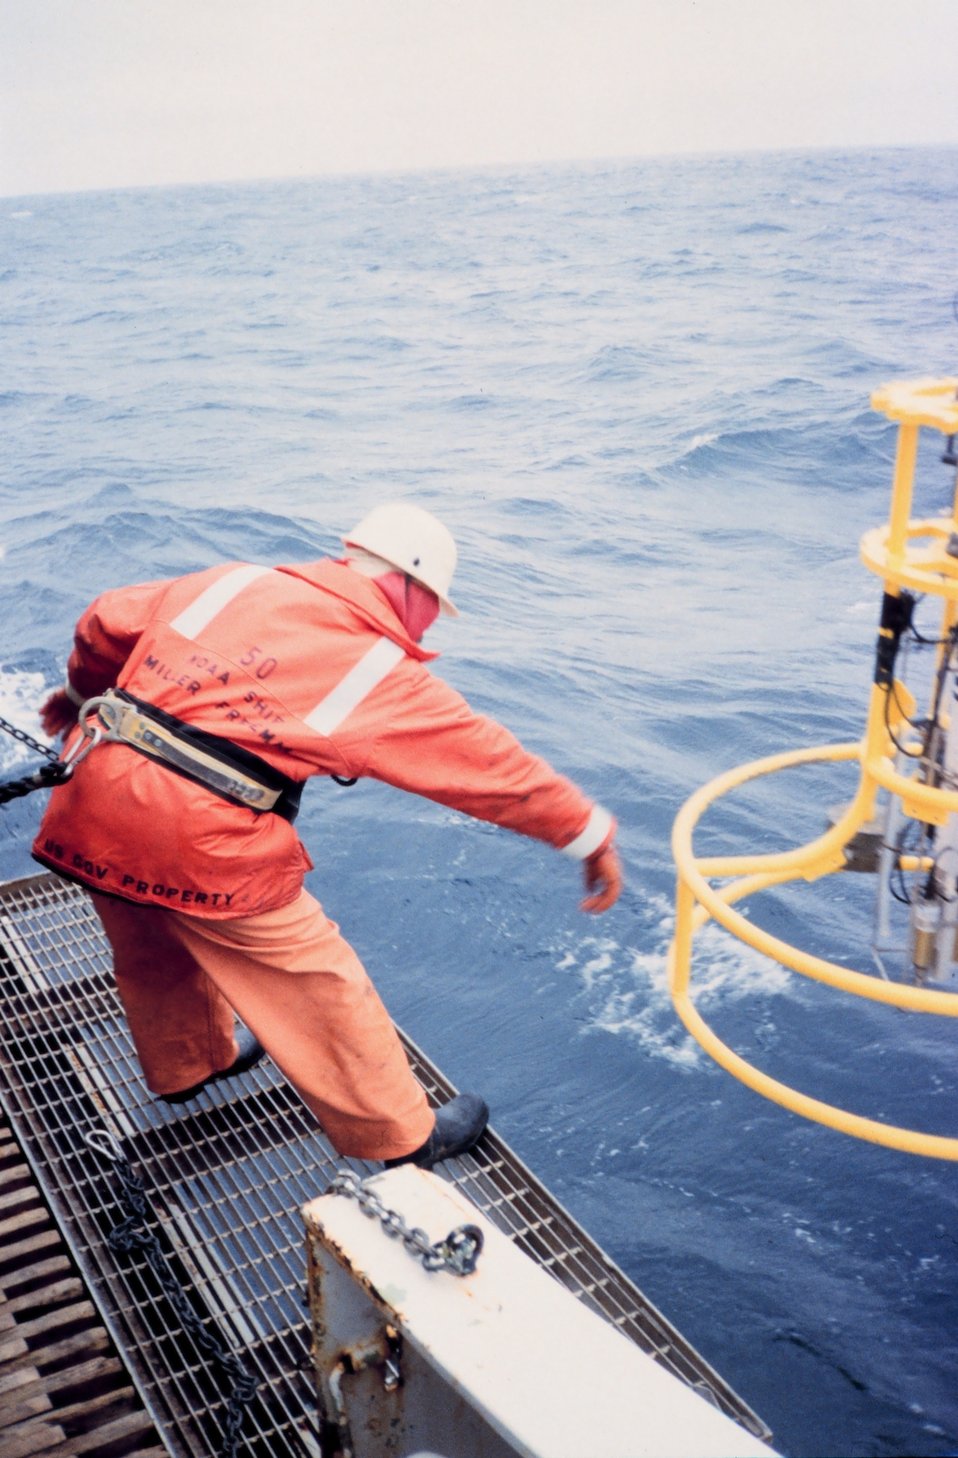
Retrieving Conductivity-Temperature-Depth measuring instrument after a lowering.